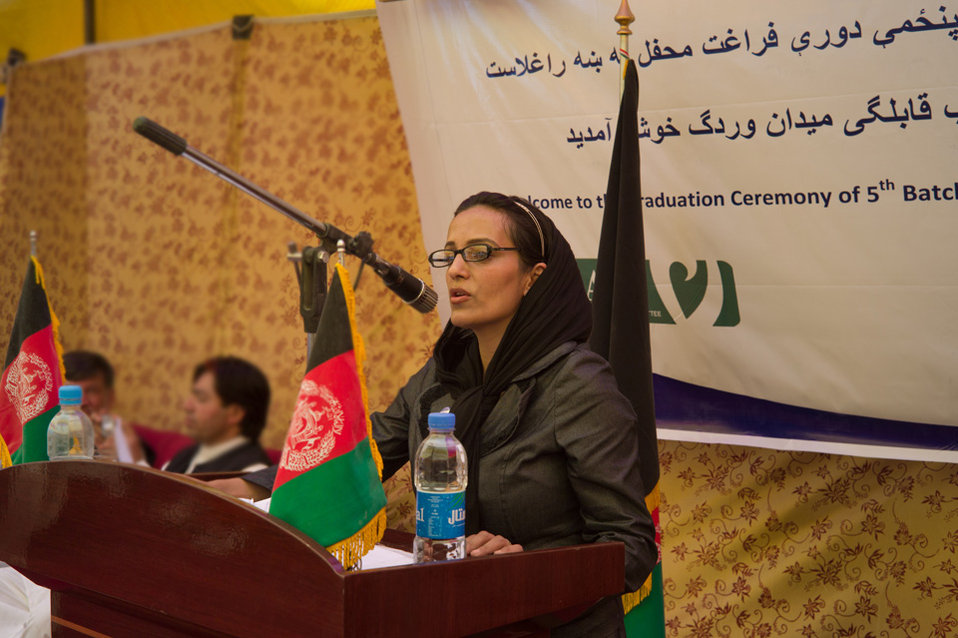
Commencement speaker